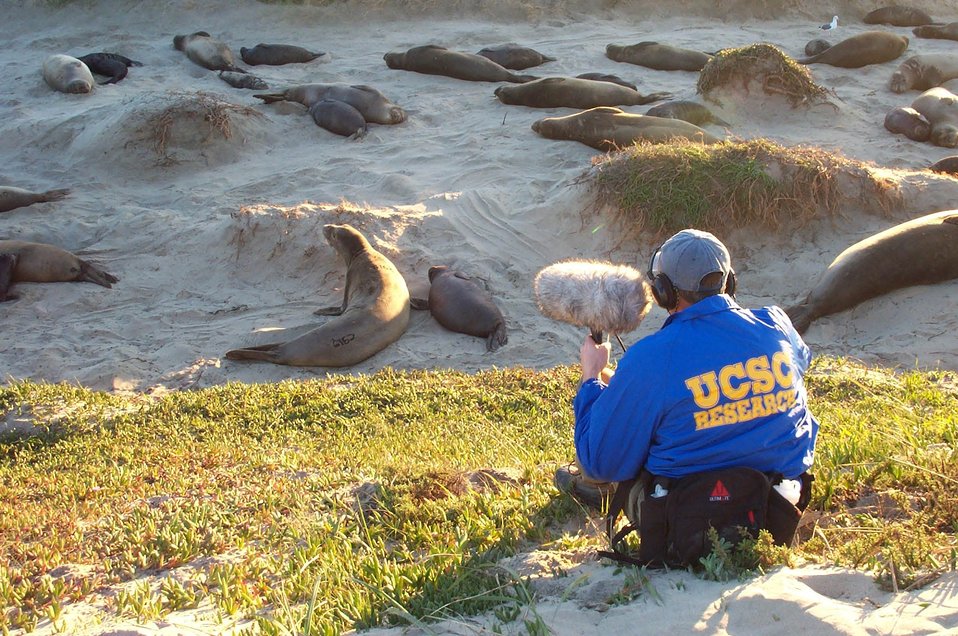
Studying elephant seal cows and calfs at Ano Nuevo Island. Note labeling for identification.